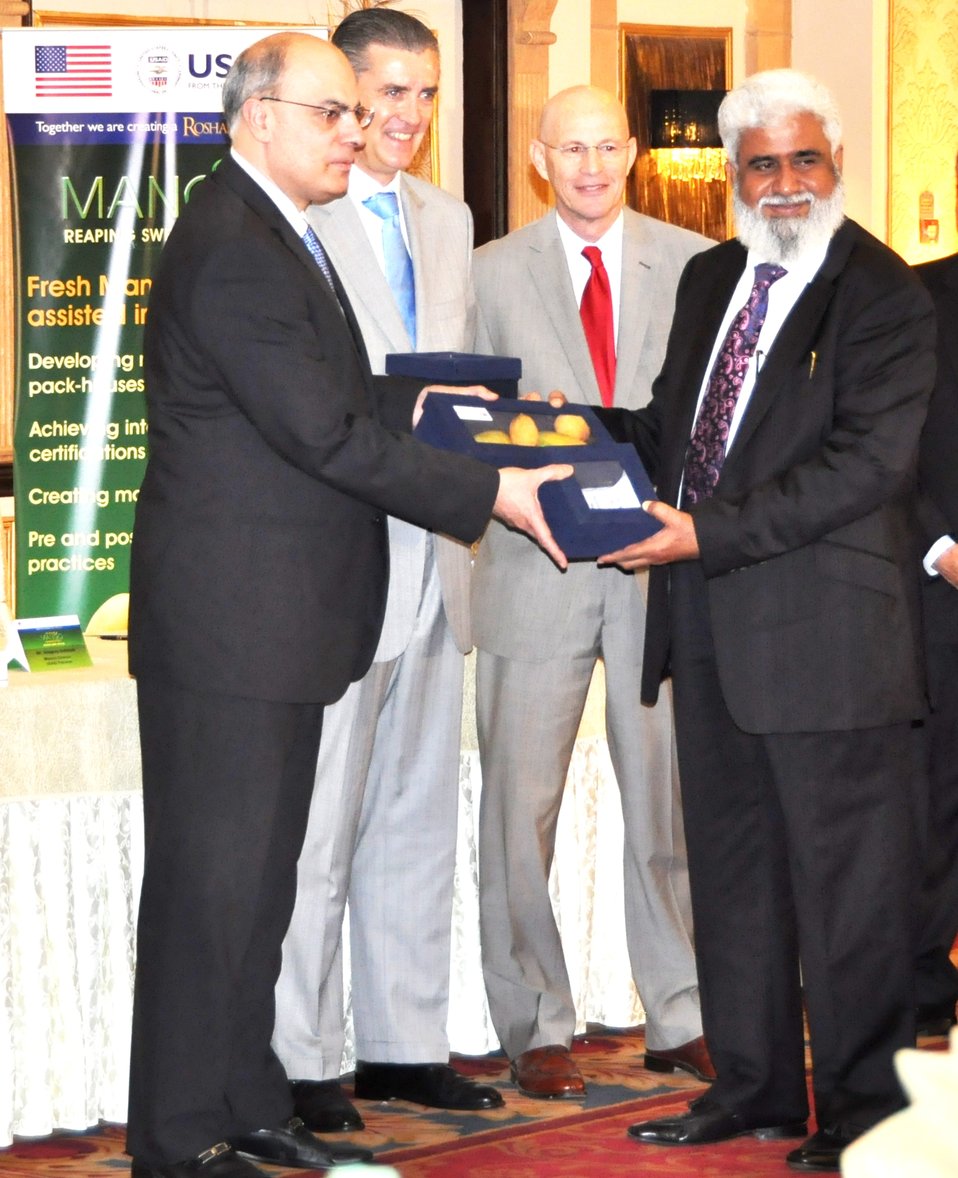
Mango Conference

Ambassador Olson and Commerce Secretary Qasim Niaz while distributing certificates to the project beneficiaries